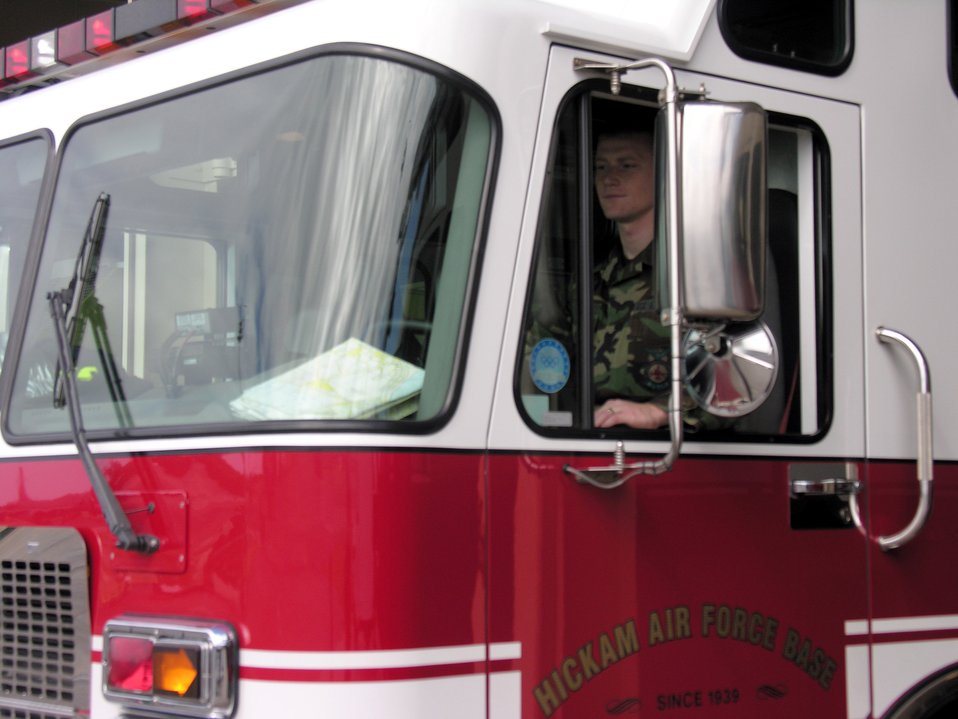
Serving through the season: Senior Airman Alan Leckie

Senior Airman Alan Leckie drives a rescue truck out of the fire station at Hickam Air Force Base, Hawaii. Airman Leckie, assigned to the 15th Civil Engineer Squadron, will work Christmas Day.